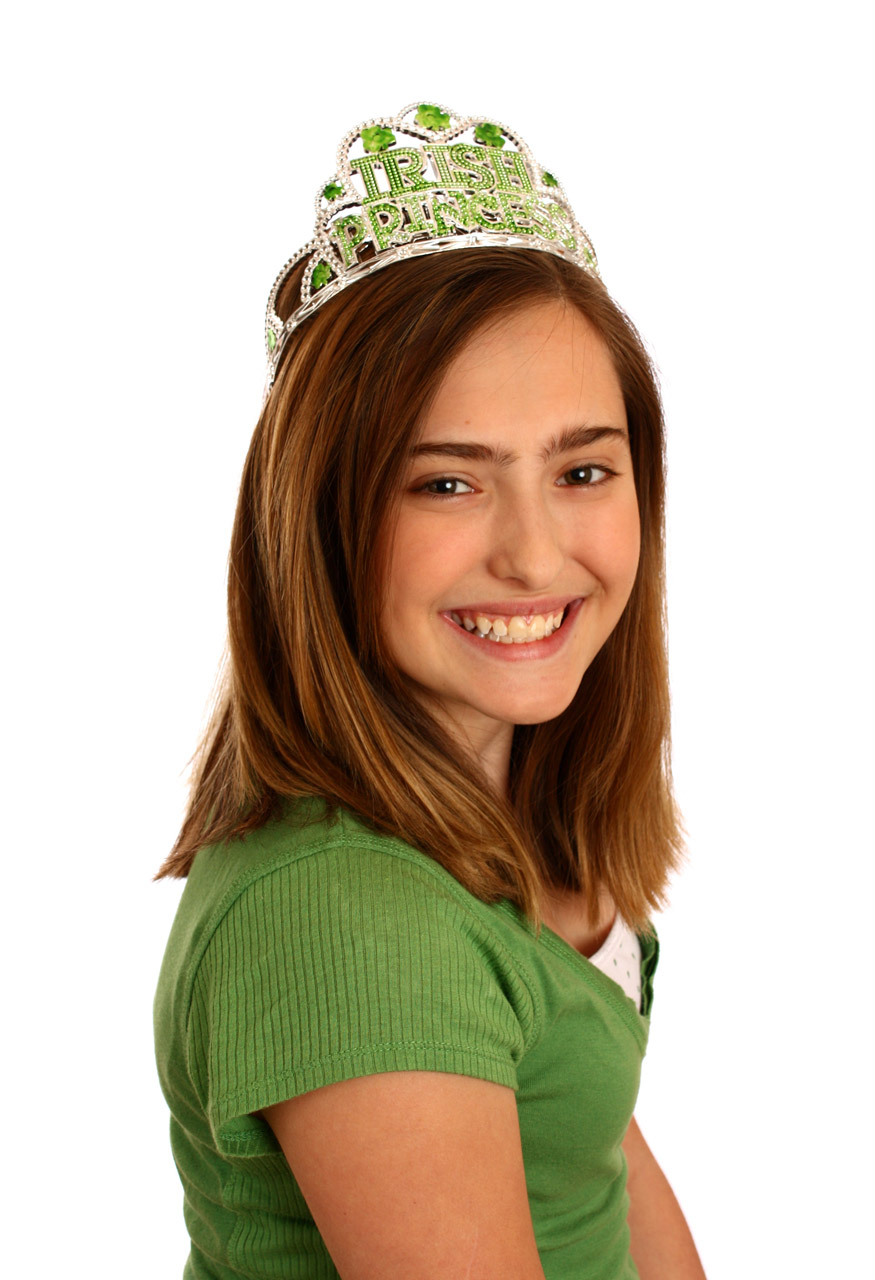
Saint patrick's day girl

A young girl dressed up for saint patrick's day in a tiara.